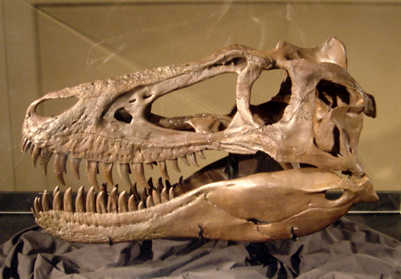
Photo shot by myself on 12/20/2005. This is a replica of the actual skull that is kept in storage. en:Category:Images of Rockford, Illinois